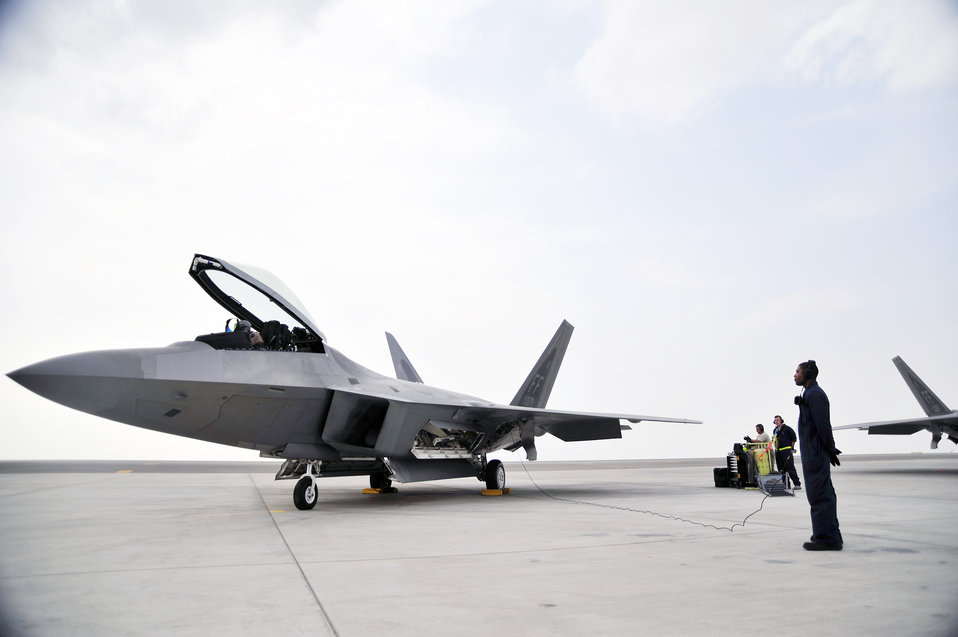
Raptors fly in Iron Falcon

Senior Airman Deandre Barnes, 1st Fighter Wing crew chief, waits for orders as the F-22 Raptor pilot prepares for take-off Nov. 30, 2009, at an airfield in Southwest Asia. The Airmen participated in the Iron Falcon exercise while on temporary duty from Langley Air Force Base, Va. Airman Barnes hails from Jacksonville, Ark.